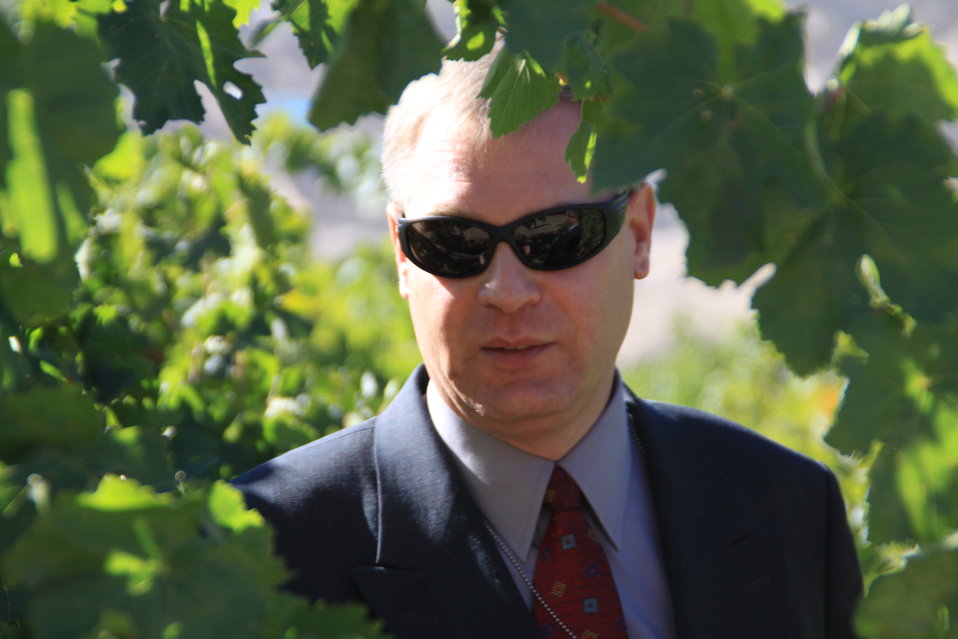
AVIPA Plus Wheat Seed Distribution 101005

US Ambassador Karl Eikenberry and USAID Acting Mission Director Kevin Brownawell joined the Minister of Agriculture, Irrigation and Livestock, H.E. Minister Mohammed Rahimi in signing a Memorandum of Understanding and distributing vouchers to area farmers for wheat and fertilizer.